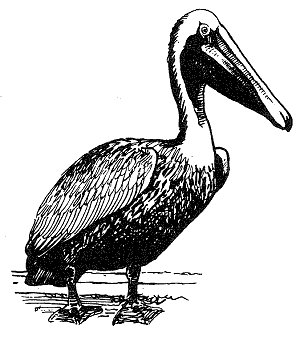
Brown pelican

One of the bird species severely affected by DDT and is now recovering well since the ban of DDT.